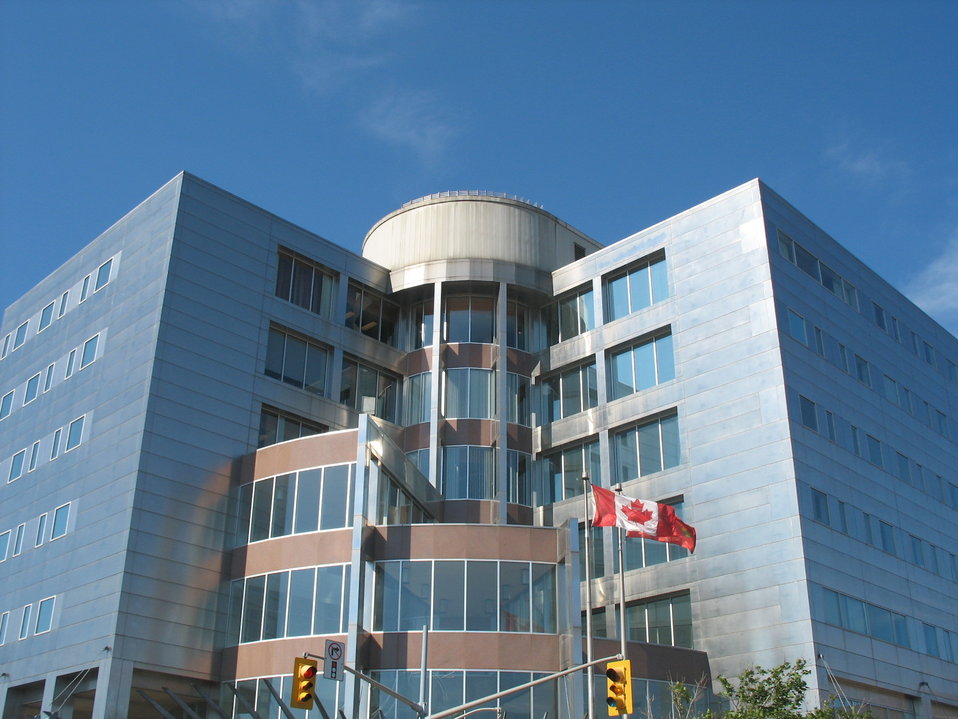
The Ministry of Northern Development, Mines and Forestry main building, located at 159 Cedar Street, Sudbury, ON.